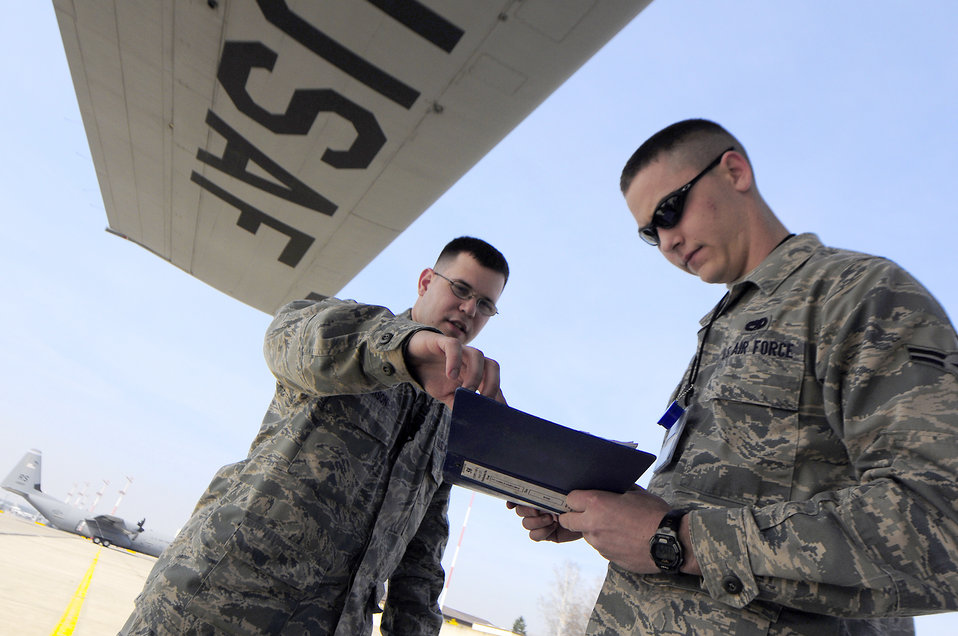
Airmen support Odyssey Dawn

Staff Sgt. Matthew Johnson (left) and Airman 1st Class Ryan Pate review a technical order before performing post-flight maintenance on a C-130J Super Hercules March 25, 2011, at Ramstein Air Base, Germany, after its return from a mission in support of Operation Odyssey Dawn. Both Johnson and Pate are assigned to the 86th Aircraft Maintenance Squadron.